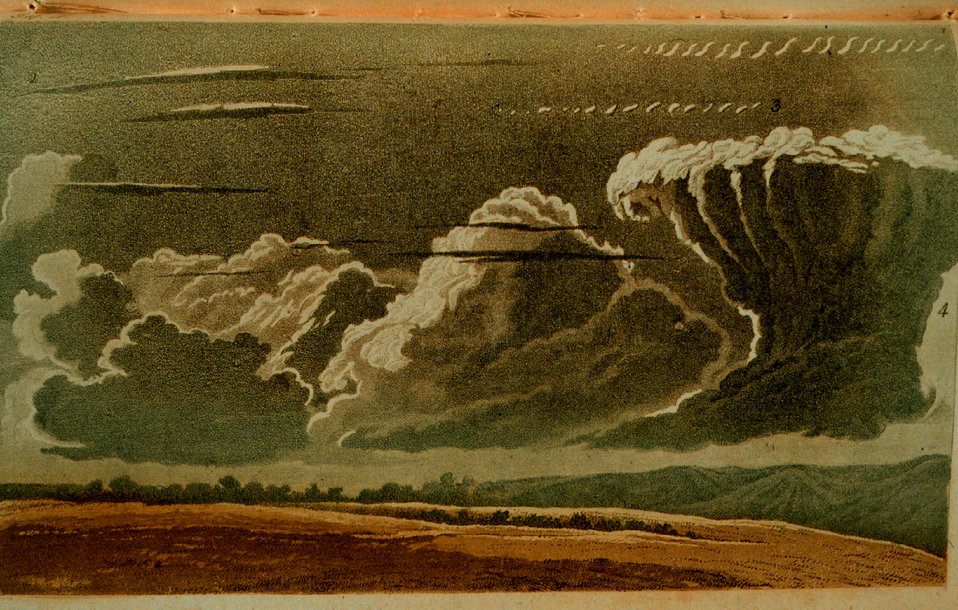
Selections from a German cloud atlas In: 'Wolken und andere Erscheinungen....', Thomas Forster, 1819 Figure 4